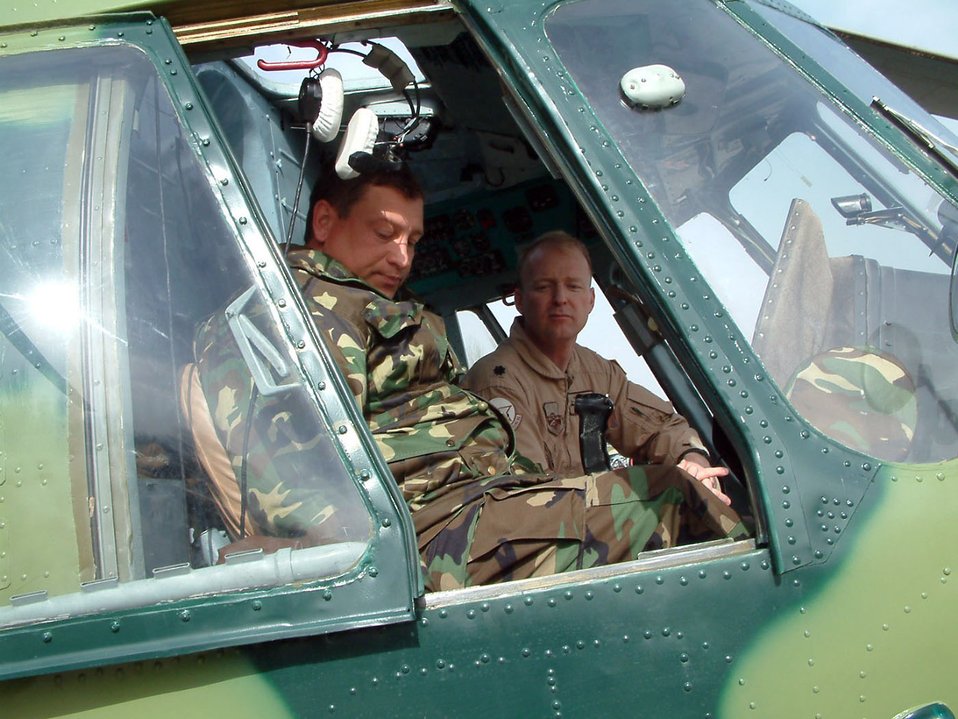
Tour marks milestone in Kyrgyzstan

Kyrgyz Air Force Col. Mirbek Kasymkulov familiarizes Lt. Col. Michael Hafer with the instruments and controls of a Mi-8 Hip helicopter during a historic first U. S. military tour of Kyrgyzstan's Frunze Air Base No. 1. Sixteen Airmen participated in the tour to help foster understanding and enhance cooperation between U.S. Airmen and their Kyrgyz counterparts. Colonel Hafer is commander of the 376th Expeditionary Operations Group.